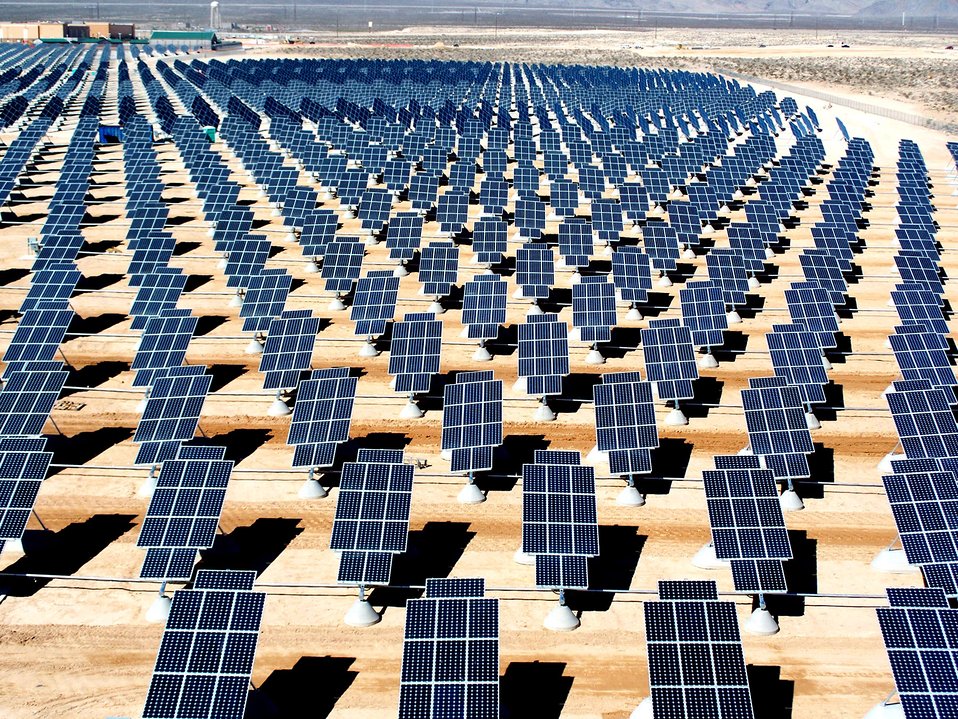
Here comes the sun

On 140 acres of unused land on Nellis Air Force Base, Nev., 70,000 solar panels are part of a solar photovoltaic array that will generate 15 megawatts of solar power for the base.